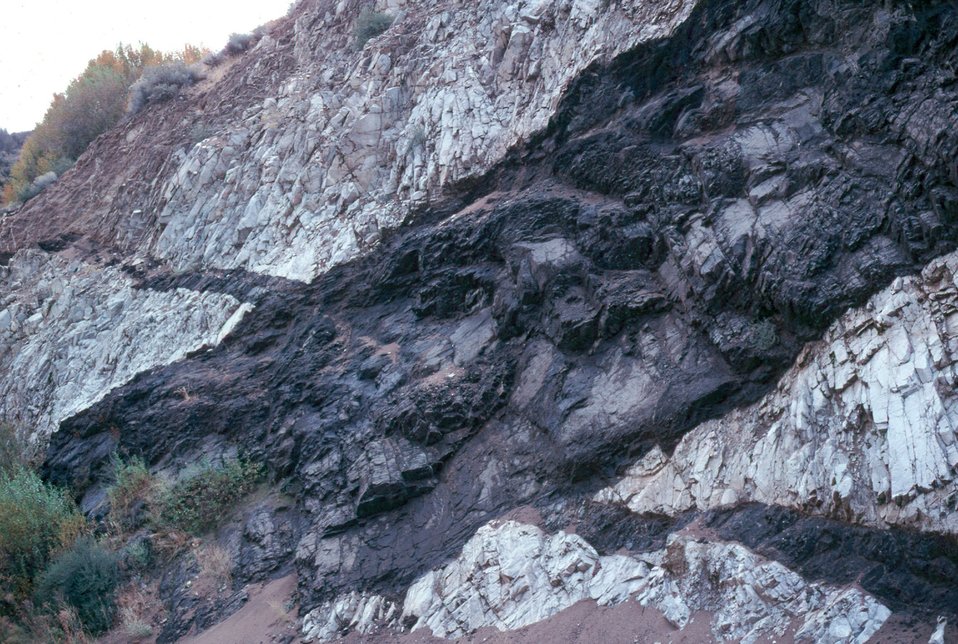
Basalt Dike on way to Idaho City Four Rivers LSRD Lower Snake River District